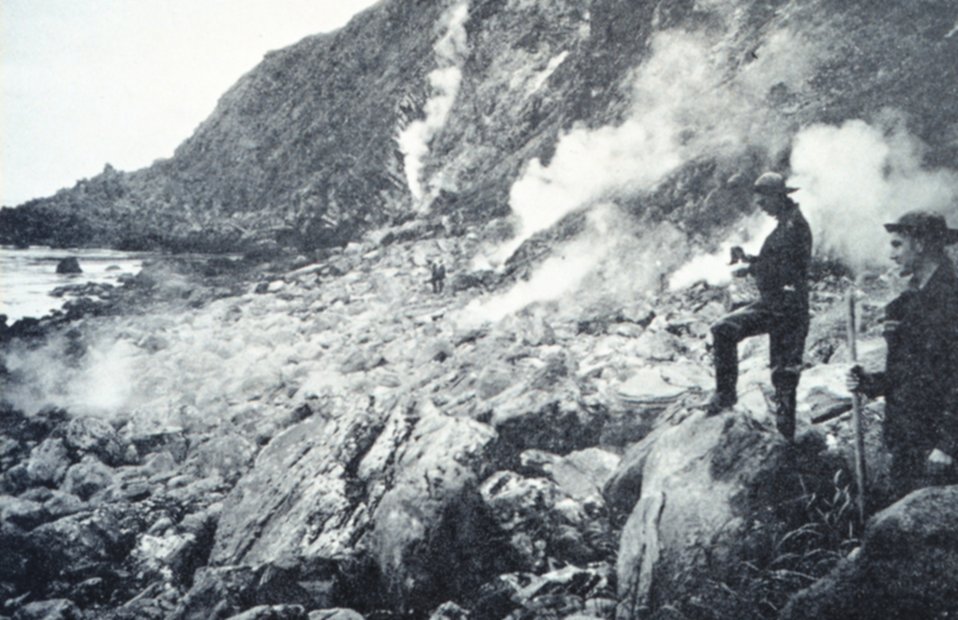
Many fumaroles on the beach at Kagamil Island